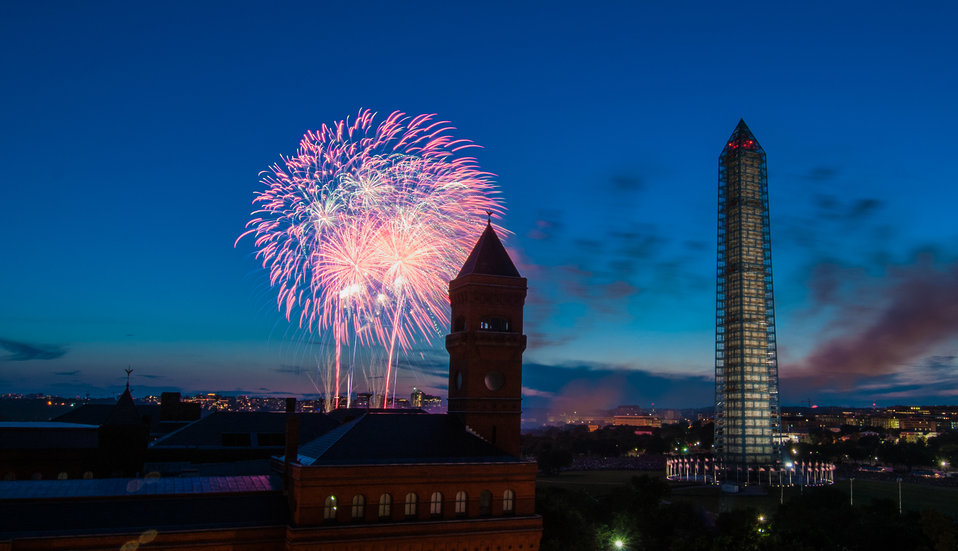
4th of July fireworks as seen from the U.S. Department of Agriculture (USDA) headquarters building, with the USDA Forest Service Yates Building in the foreground, left, and the Washington Monument in Washington, D.C., on July 4, 2013.